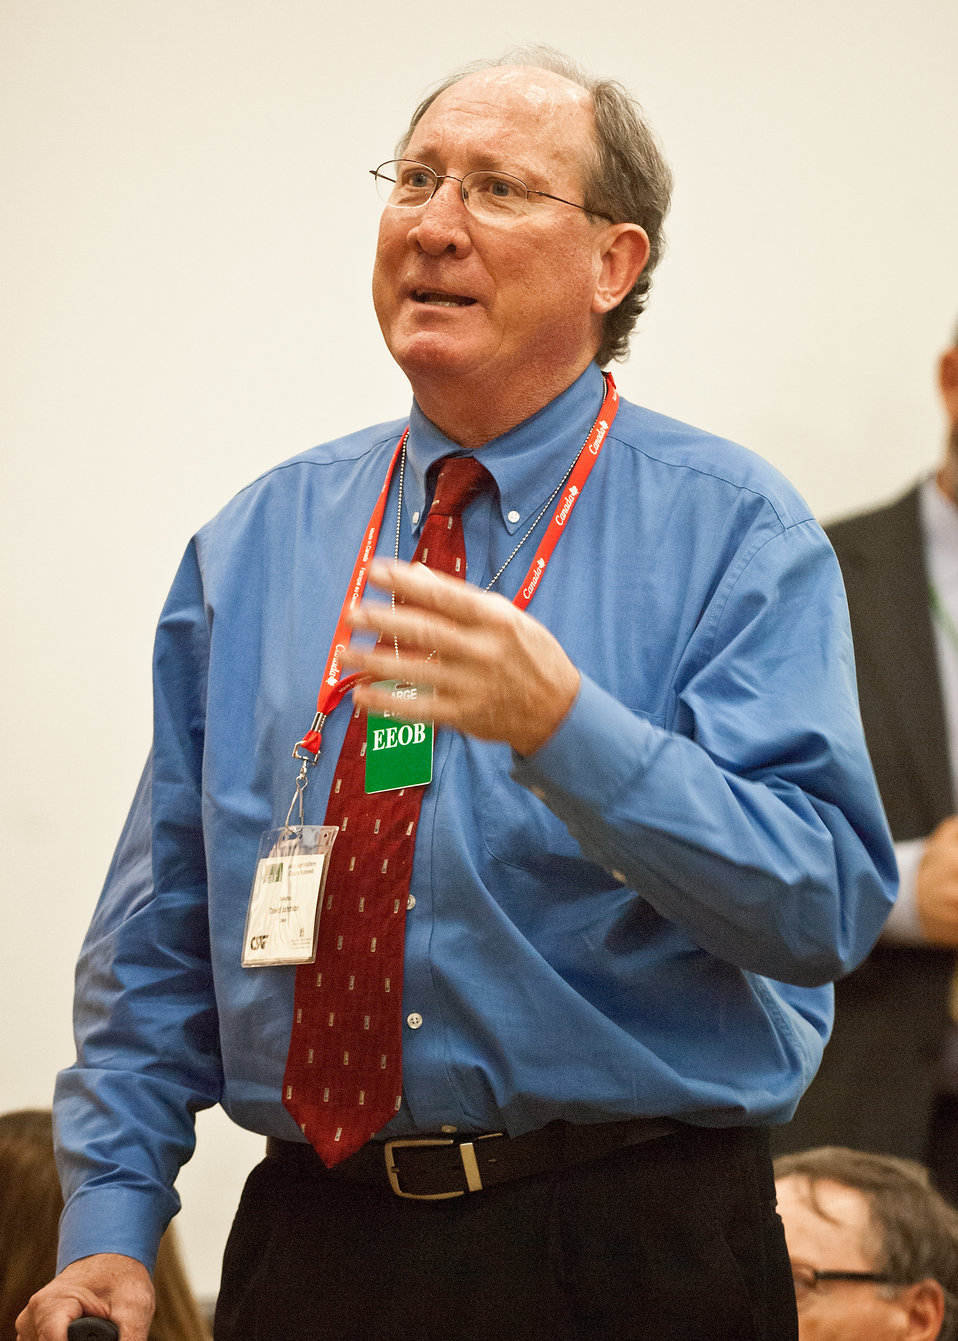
State Senator David Johnson, Iowa poses a question at the 11th Annual Meeting of State Agriculture and Rural Leaders at the Eisenhower Executive Office Building in Washington, D.C., on Friday, January 6, 2012.